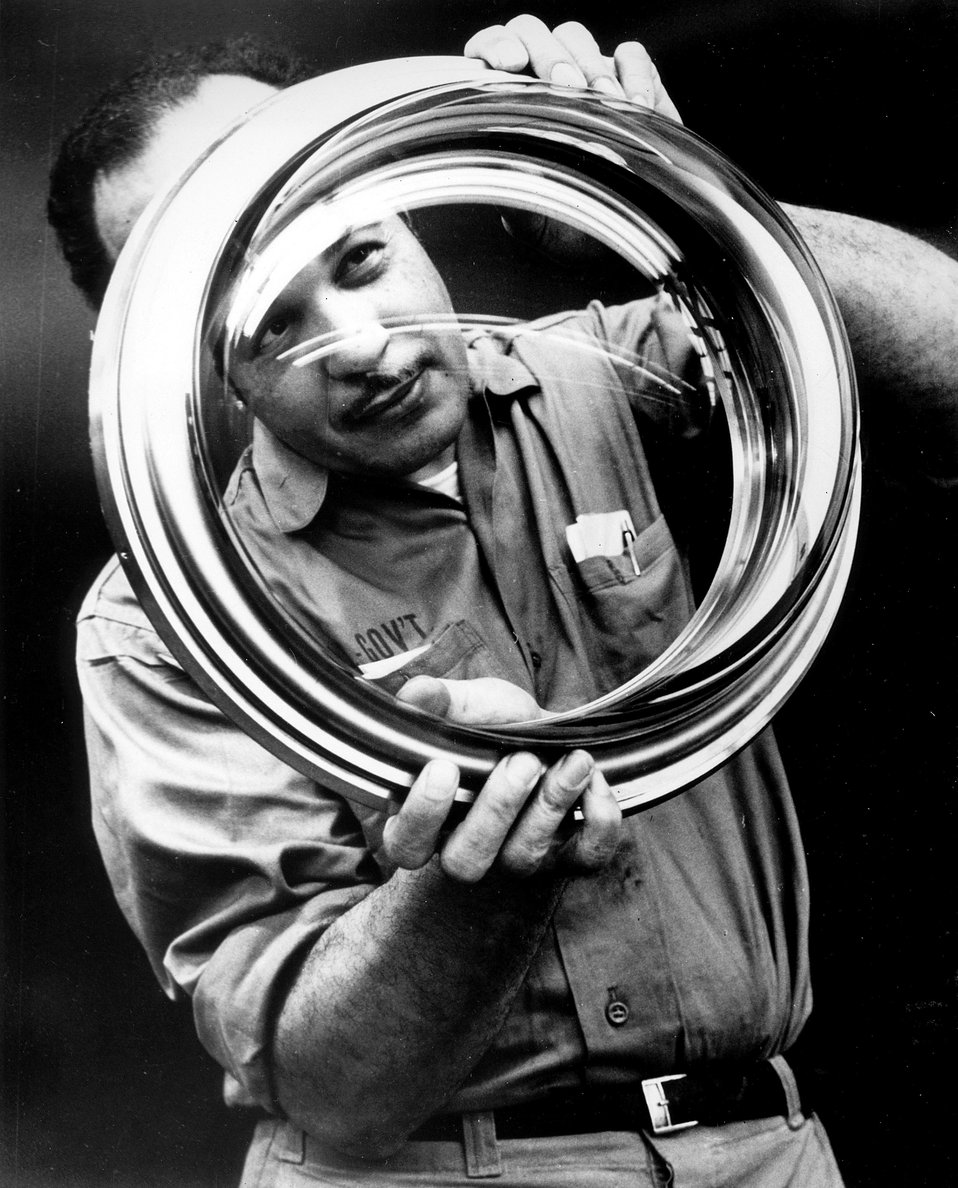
This hemispherical window was designed to cover the camera ports inside Argonne Lab's 12-foot (diameter) hydrogen bubble chamber.
c.1970